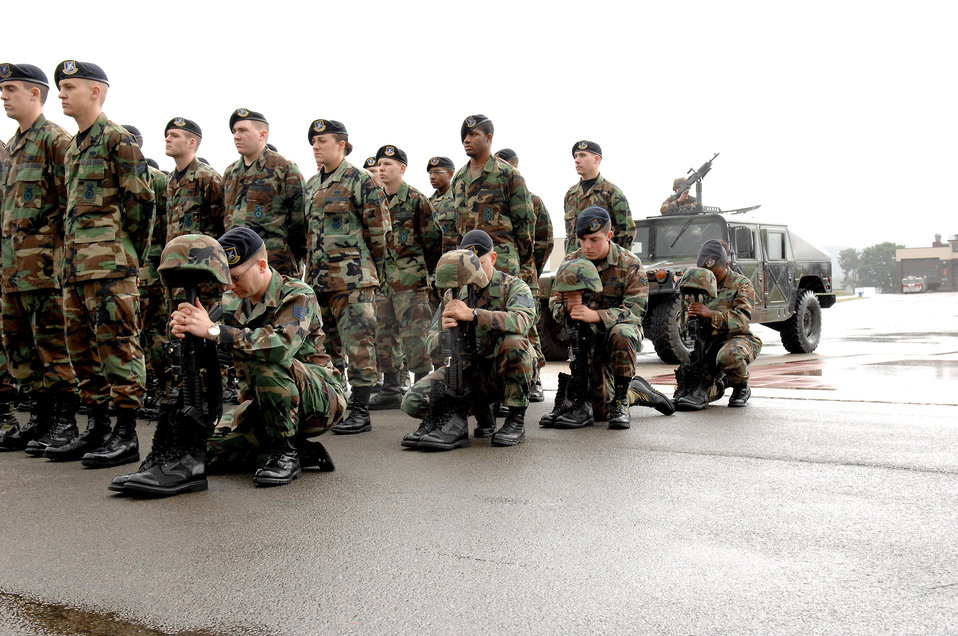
Ramstein security forces honor fallen comrades

Tech. Sgt. Jason Moore (left to right), Staff Sgt. Robert Culbertson, Airman 1st Class Nathan Smith and Airman 1st Class Cheniel Martin kneel in place for fellow Airmen during the Last Guard Mount May 16 at Ramstein Air Base, Germany. The ceremony, which recognizes fallen security forces members, was held in conjunction with National Police Week. The Airmen are assigned to the 435th Security Forces Squadron.